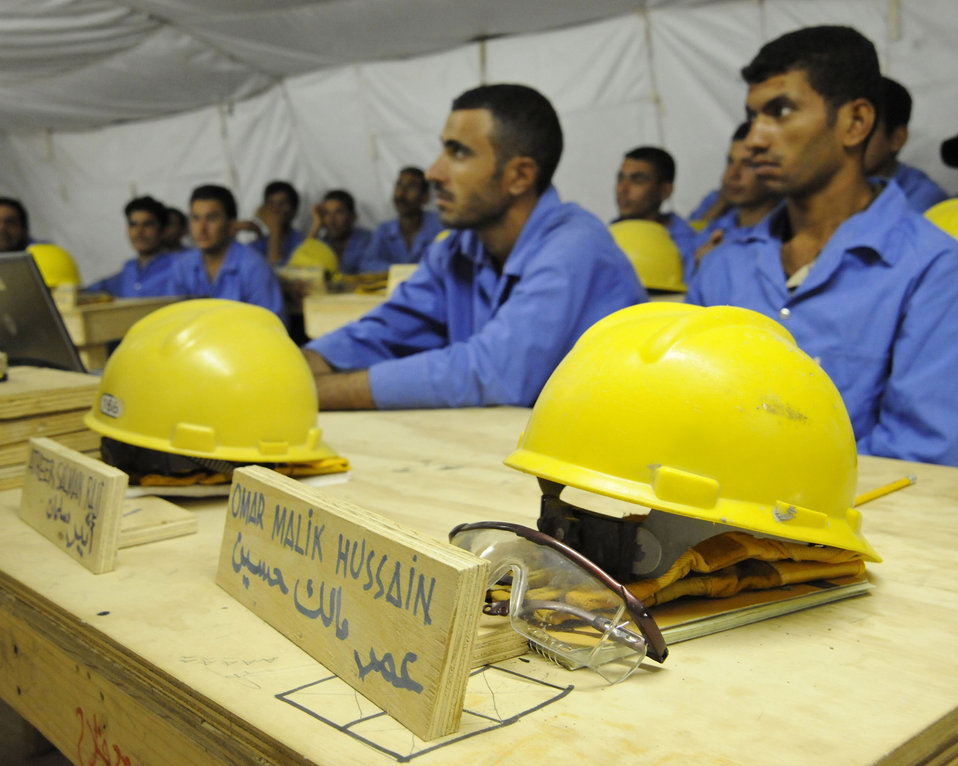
RED HORSE Airmen give Iraqis reason for hope

HAWR RAJAB, IRAQ -- Iraqi student workers listen to a lecture during the builders course of the Village of Hope program at Hawr Rajab, Iraq on Aug. 26. At the start of the course all students receive steel-toe boots, work gloves, coveralls, eye protection and a hard hat.